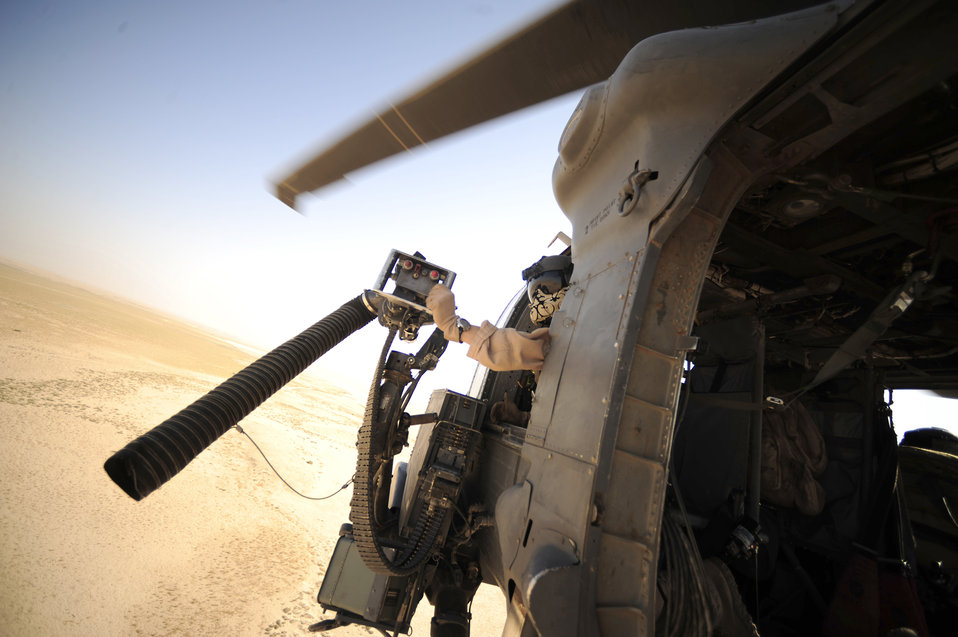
Pave Hawk mission over Iraq

Staff Sgt. Andrew Pena scans his sector as a gunner during a mission July 12, 2010, at Joint Base Balad, Iraq. Sergeant Pena is an HH-60G Pave Hawk aerial gunner assigned to the 64th Expeditionary Rescue Squadron.